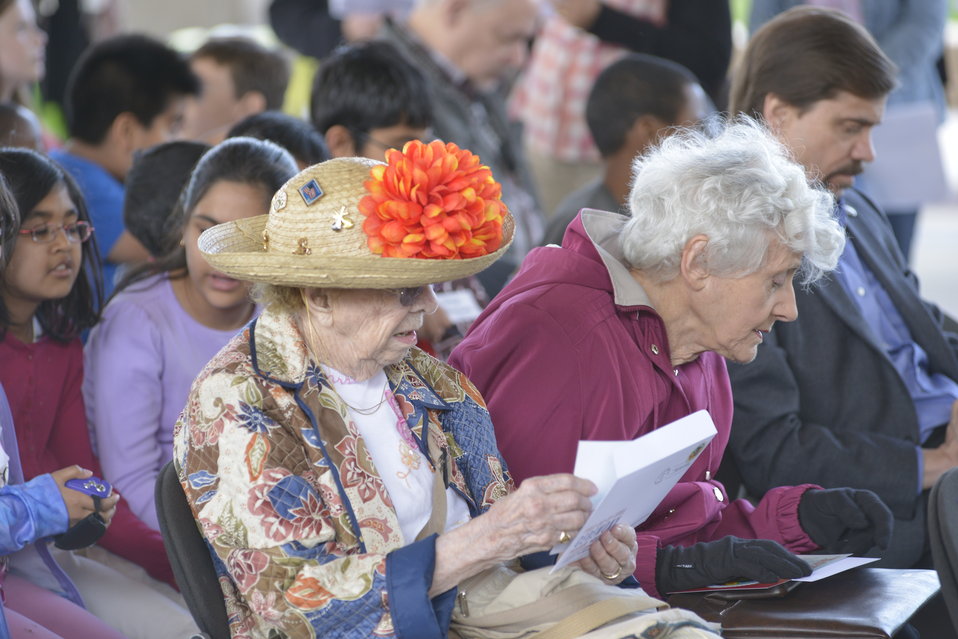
U.S Postal Services introduces a new Global: Sea Surface temperatures forever stamp at the Earth Day program at Department of Energy on April 22, 2014.